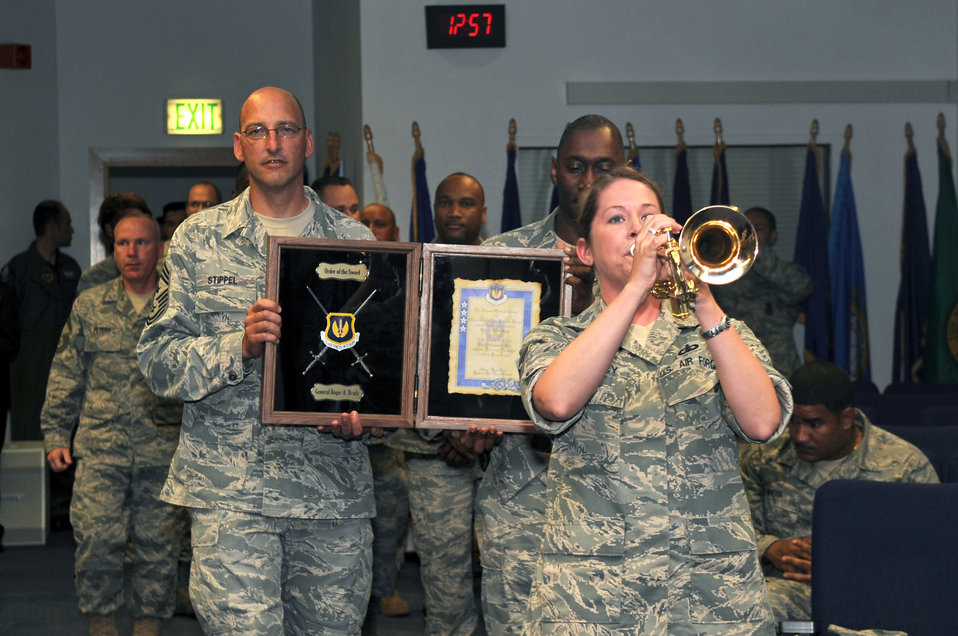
USAFE enlisted honor general with Order of the Sword

Staff Sgt. Brenna Dooley plays a trumpet before USAFE enlisted members present Gen. Roger A. Brady with an Order of the Sword invitation July 14, 2010 at the Kisling NCO Academy on Kapaun Air Station, Germany. Sergeant Dooley is a member of the U.S. Air Forces in Europe Band and General Brady is the USAFE commander.